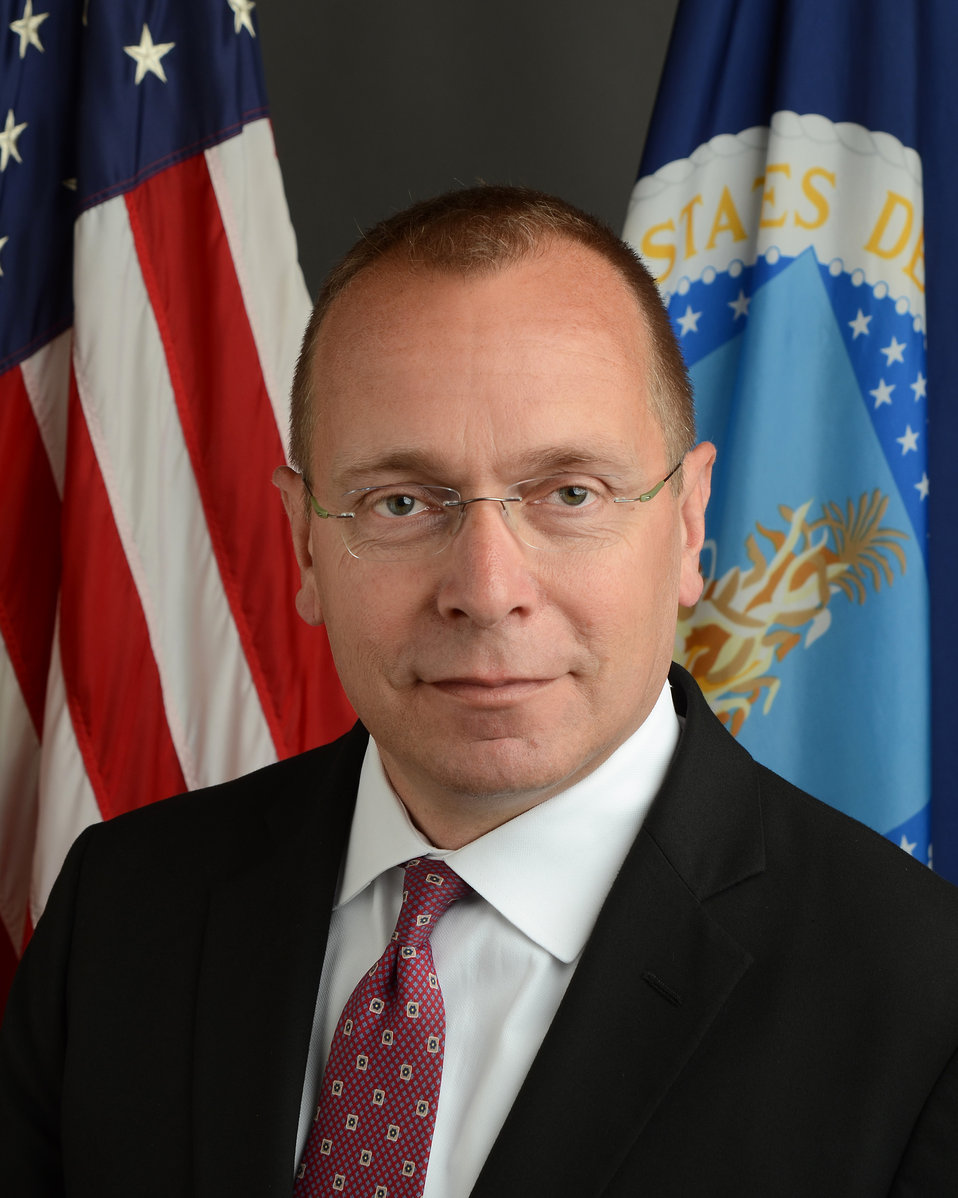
U.S. Department of Agriculture (USDA) Foreign Agriculture Service (FAS) Administrator Phil Karsting.